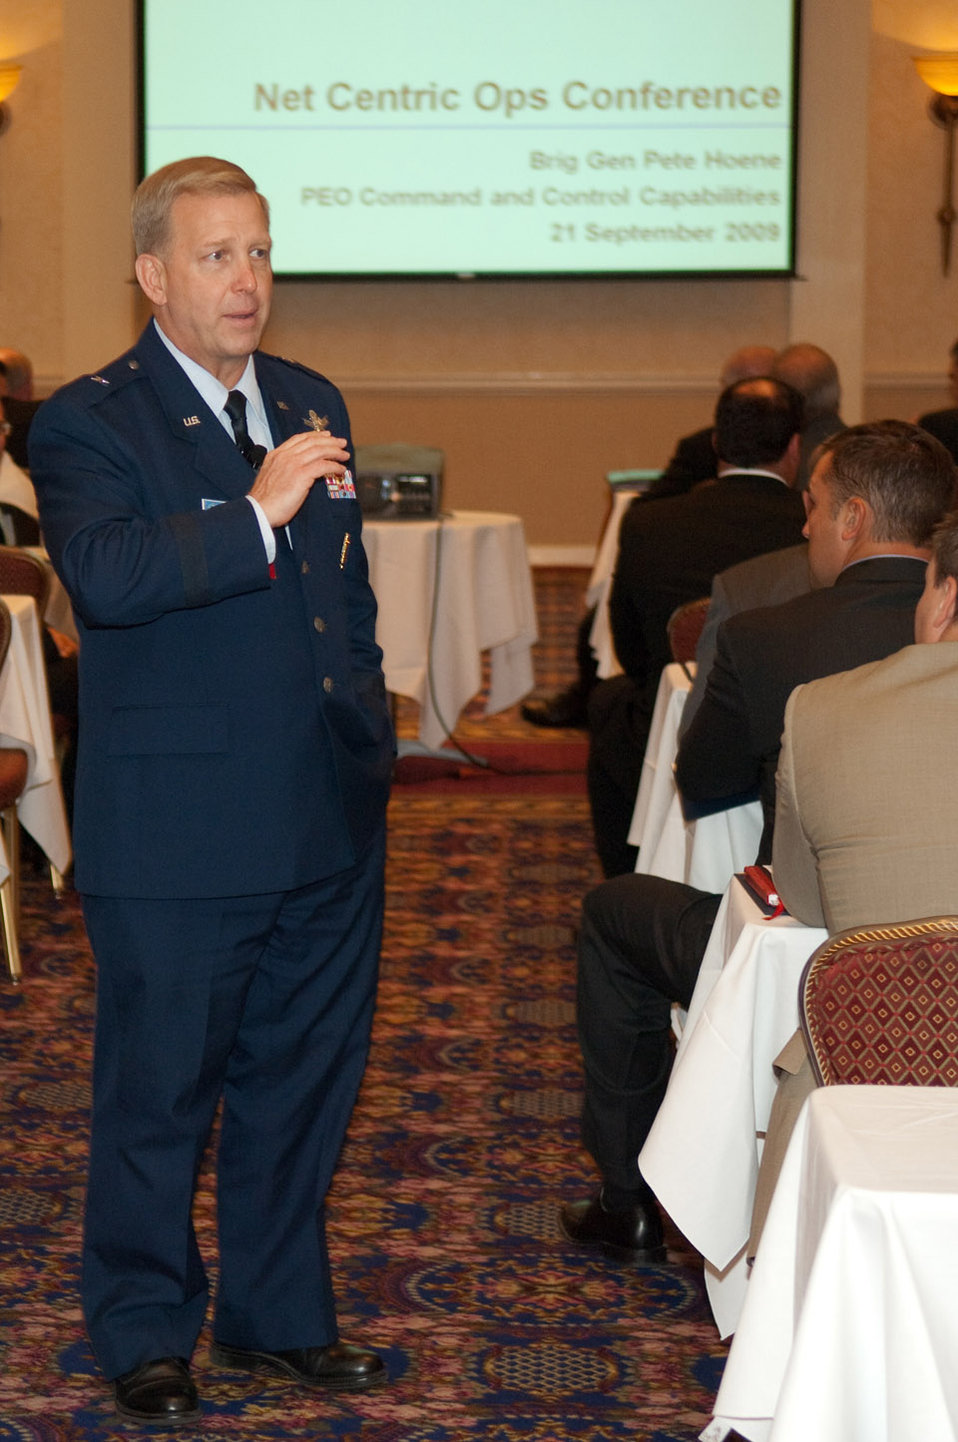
Leaders call for balance between network use and protection

Brig. Gen. Pete Hoene, program executive officer for command and control capabilities at the Defense Information Systems Agency, shares his thoughts with audience members Sept. 21, 2009, during this year's Net-centric Operations Conference, held in New Castle, N.H..